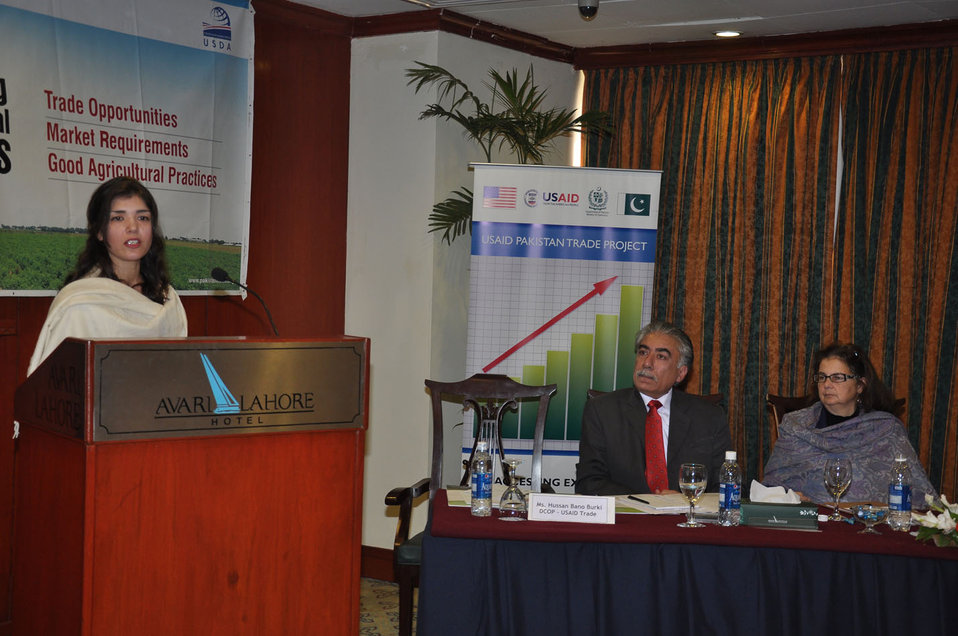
Ms. Hussan Bano Burki, Deputy Chief of Party USAID Trade Project addressing the participants at AG workshop organized by USAID Trade Project.